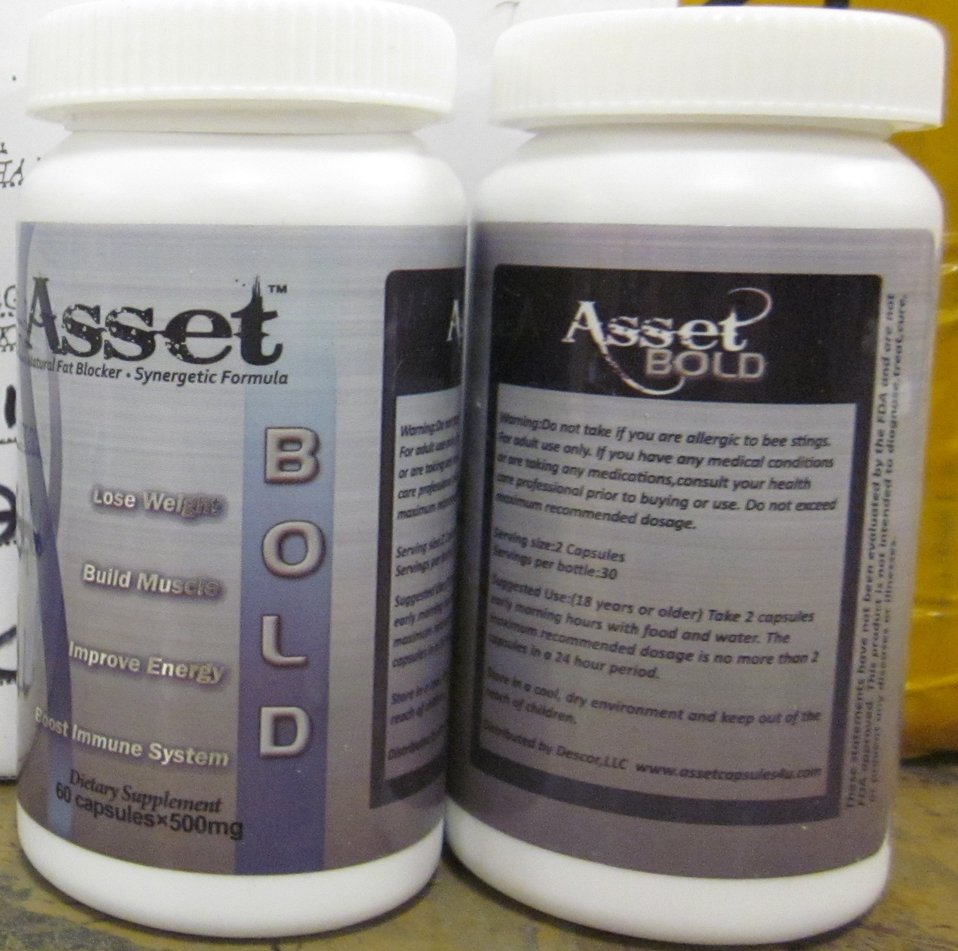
Asset Bold

May 16, 2014 - The FDA is advising consumers not to purchase or use Asset Bold, a product promoted and sold for weight loss. The product was found to contain undeclared sibutramine. For more information, go to www.fda.gov/drugs/resourcesforyou/consumers/buyingusingme...

And read this Consumer Update: Beware of Fraudulent ‘Dietary Supplements’